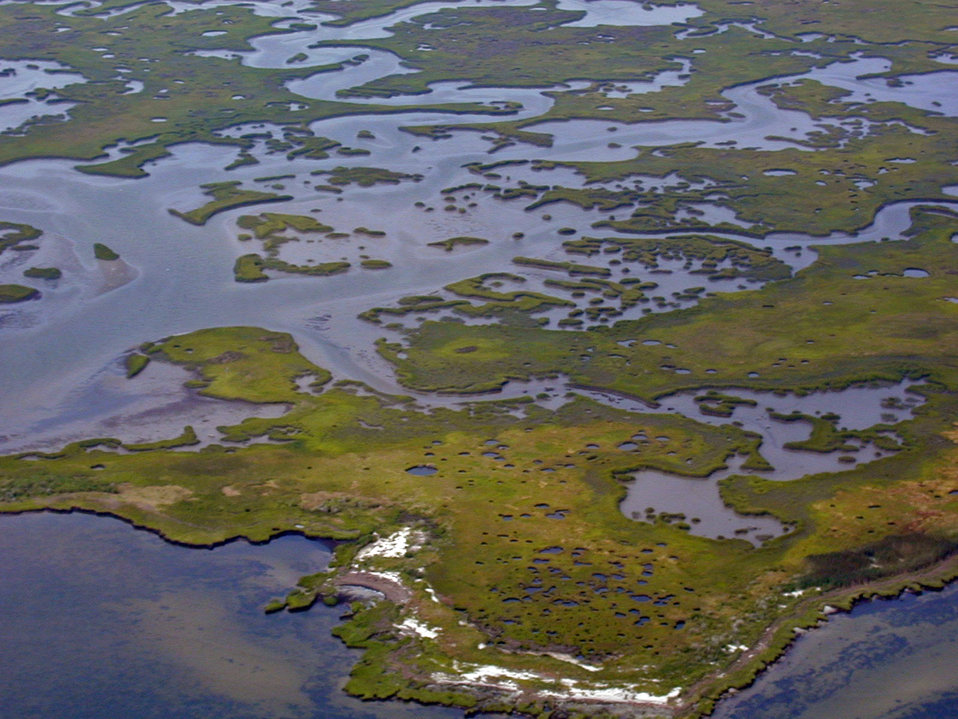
Aerial view

Plum Tree Island National Wildlife Refuge, VA.